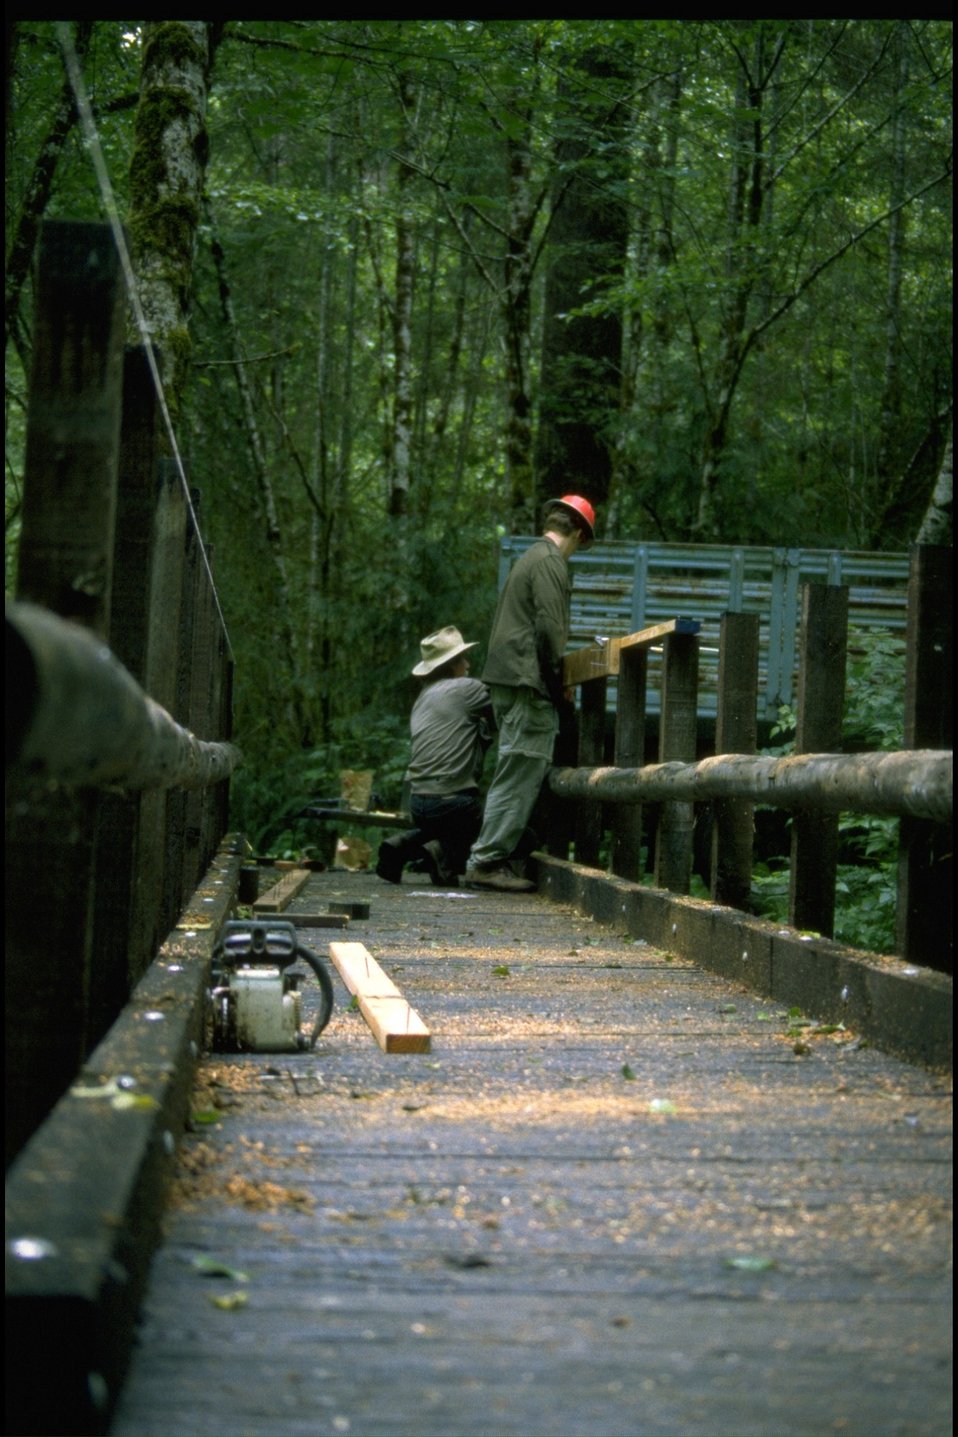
Clay Creek Bridge Project.